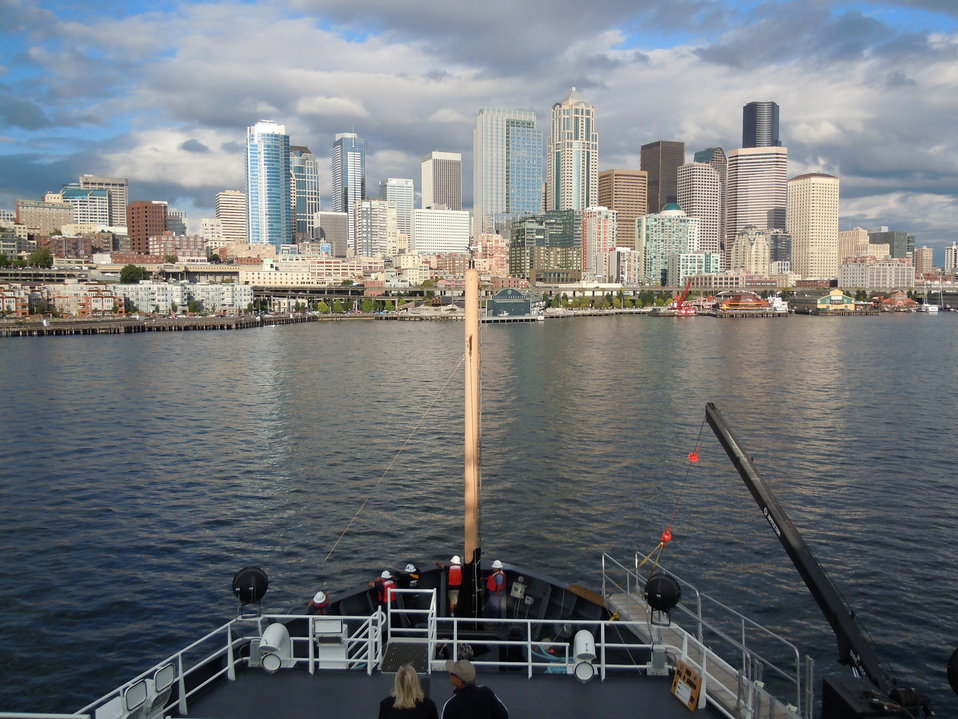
The Seattle waterfront as seen from the NOAA Ship BELL SHIMADA.